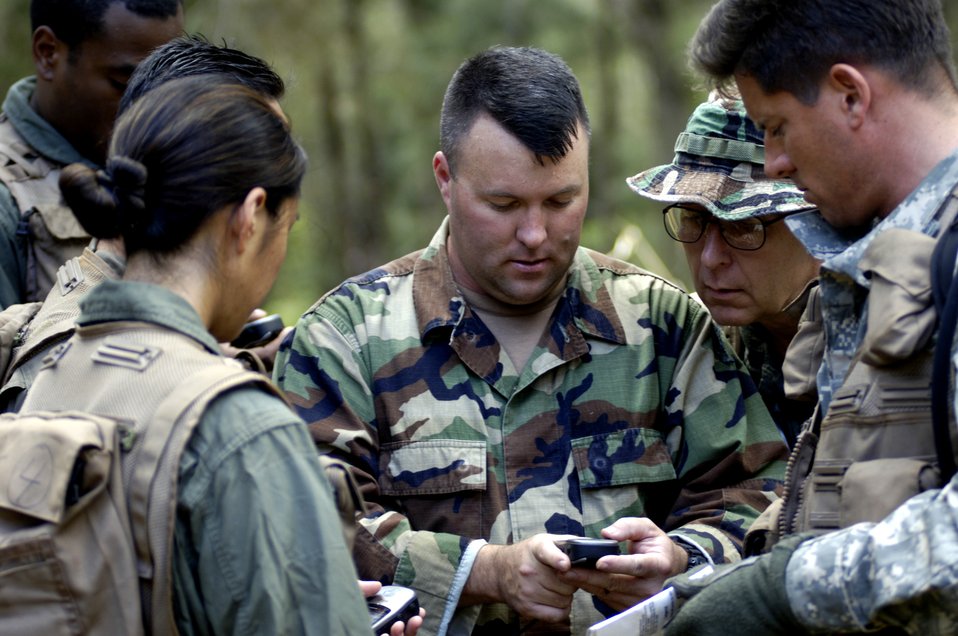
Survival refresher course

Staff Sgt. Christopher Ferguson shows students how to use a Global Positioning System during a ground survival refresher course at Schofield Barracks, Hawaii, on Thursday, May 4, 2006. The course provides realistic training for aircrew members and concentrates on the principles, techniques and skills necessary to survive in any environment. Sergeant Ferguson is a survival, evasion, resistance and escape instructor with the 15th Operations Support Squadron at Hickam Air Force Base, Hawaii.